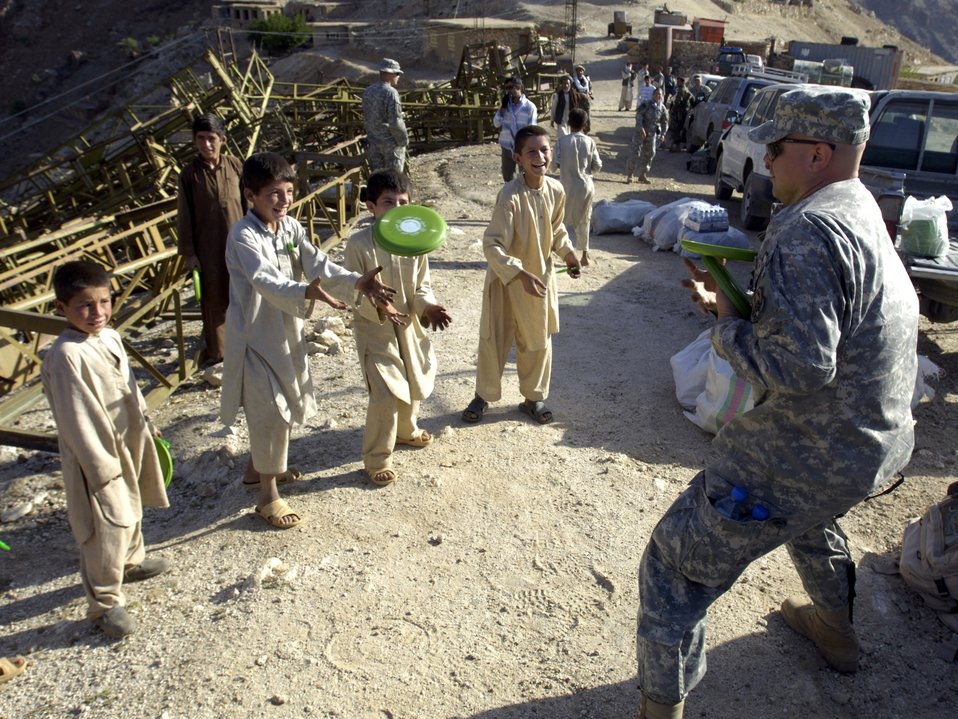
Airmen trek over mountains to deliver aid in Afghanistan

Tech. Sgt. Ralph Binion III plays with a flying disc with village boys Aug. 7 in Roydara village in the Shutol district of Panjshir province, Afghanistan. Sergeant Binion is a services craftsman deployed from Mountain Home Air Force Base, Idaho,and is a member of the Panjshir Provincial Reconstruction Team. He and his fellow PRT members made an 11-mile round-trip trek over a mountain pass and into a river valley to provide medical care to Afghans living in Roydara.